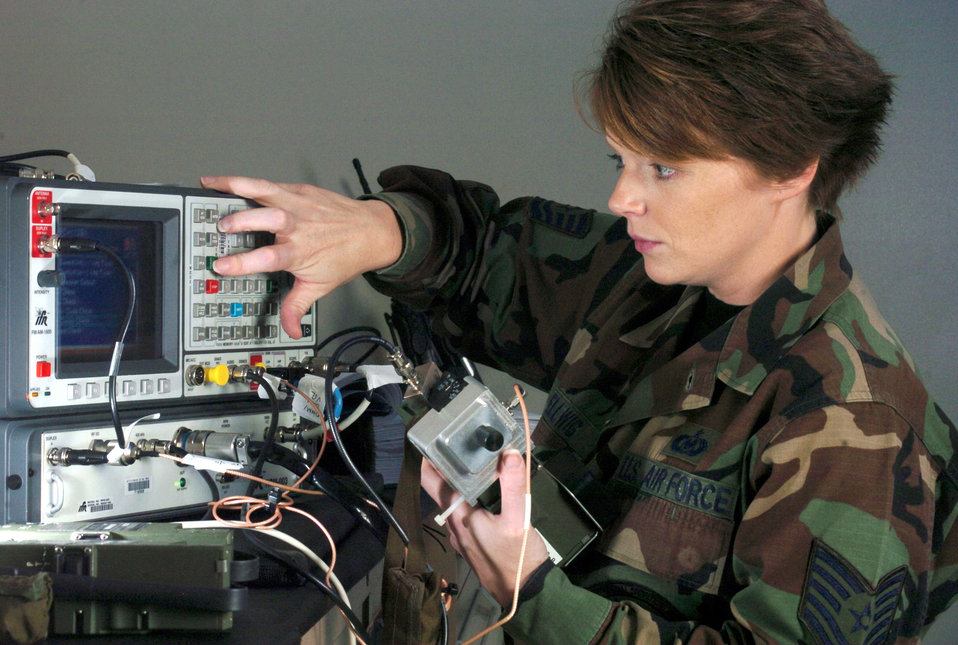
Life-support Airmen offer keys to survival

KADENA AIR BASE, Japan -- Tech. Sgt. Jennifer Hellwig inspects a survival radio here. She is a life-support technician with the 17th Special Operations Squadron.